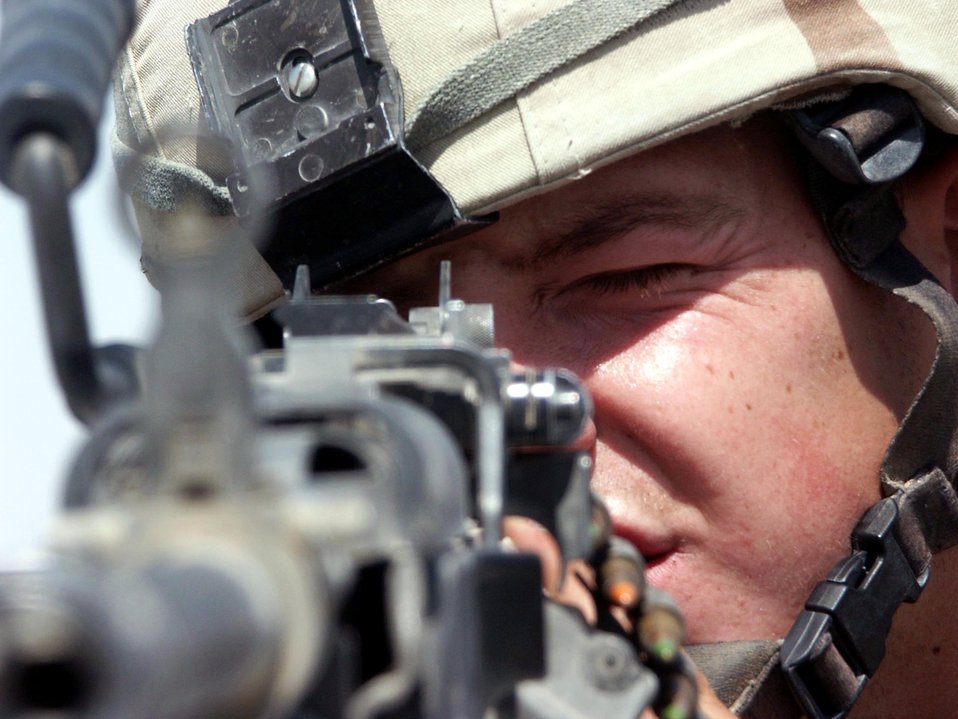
Taking aim

TALLIL AIR BASE, Iraq -- Senior Airman Kristofer Kline, 822nd Security Forces Squadron, sights in on a distant target while on guard duty. He and members of his squadron are beginning to return home after serving more than five months here supporting Operation Iraqi Freedom.